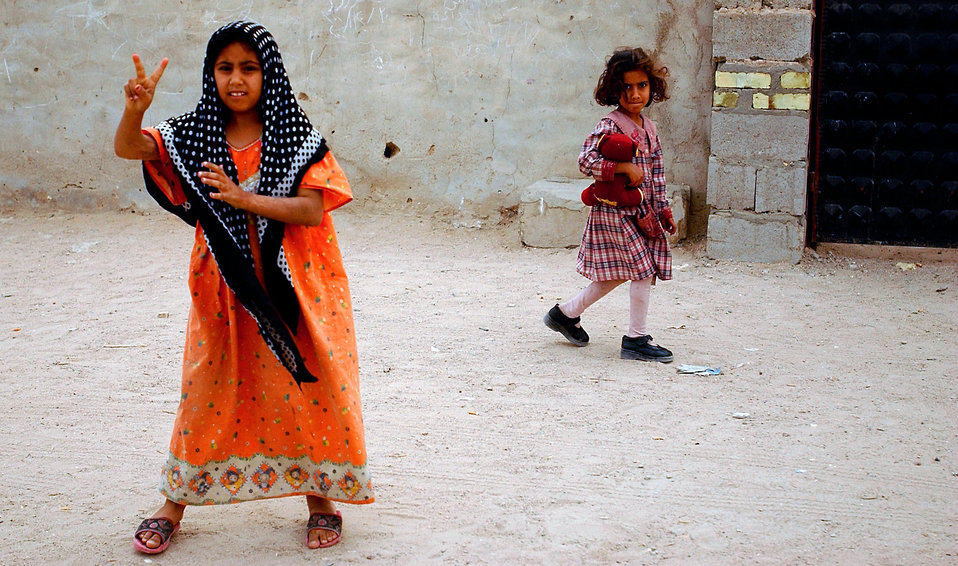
Peace to you

OPERATION IRAQI FREEDOM -- Military convoys catch the attention of a couple of children in Umm Qasr during Operation Iraqi Freedom, April 12, 2003. Operation Iraqi Freedom is the multi-national coalition effort to liberate the Iraqi people, eliminate Iraq's weapons of mass destruction, and end the regime of Saddam Hussein.